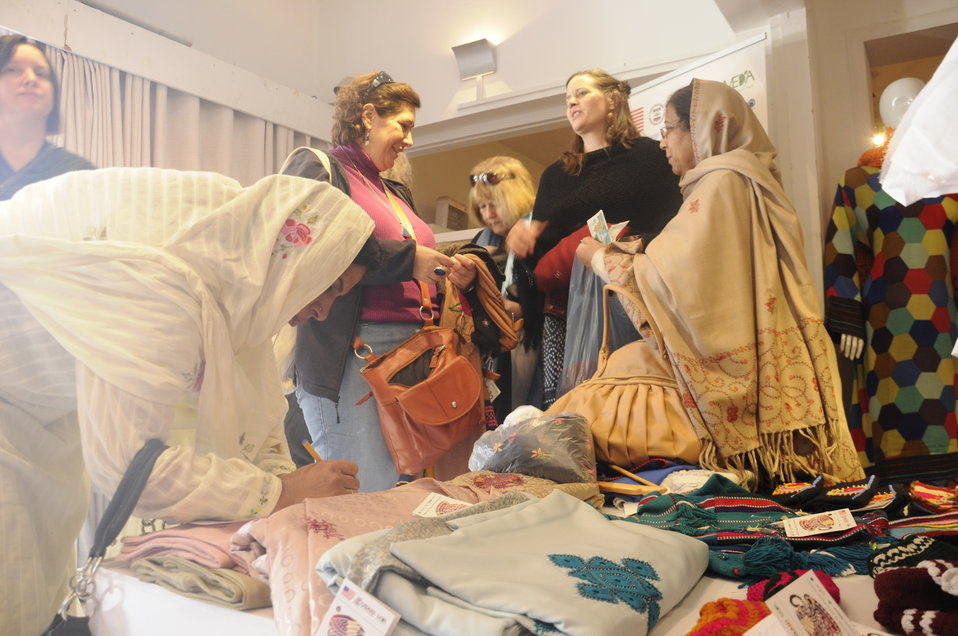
Sales, sales and more sales of trendy and colorful cultural Hand Embellished Products at Stitching and Chai Exhibition organized by the USAID's Entrepreneurs Project